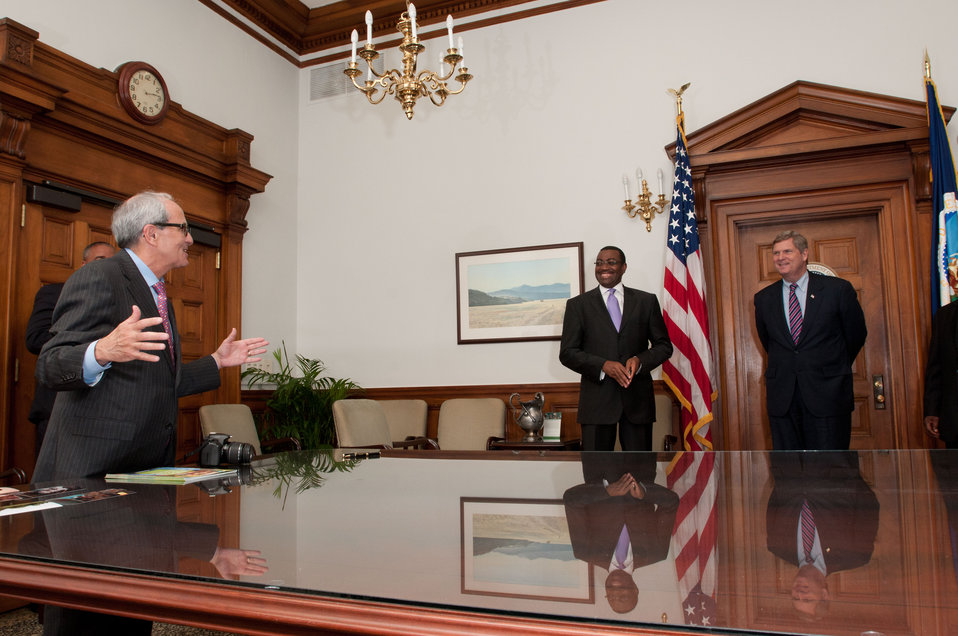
Marshall Matz (left) asks U.S. Department of Agriculture Secretary Tom Vilsack (right) a question about a precision equipment in Africa, following the signing of a Memorandum of Understanding with Alliance for a Green Revolution in Africa (AGRA) in Secretary Vilsack’s offices in Washington, DC, on Thursday, May 26, 2011.